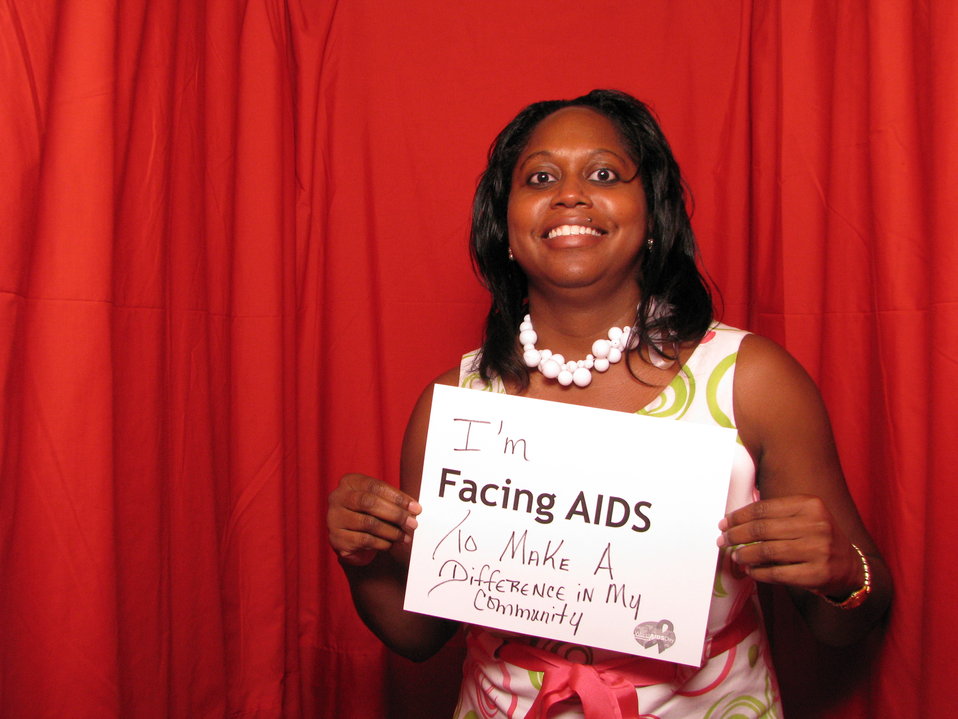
I'm FACING AIDS to make a difference in my community.

From the AIDS.gov photo booth at the U.S. Conference on AIDS, September 2010 (Orlando, FL).